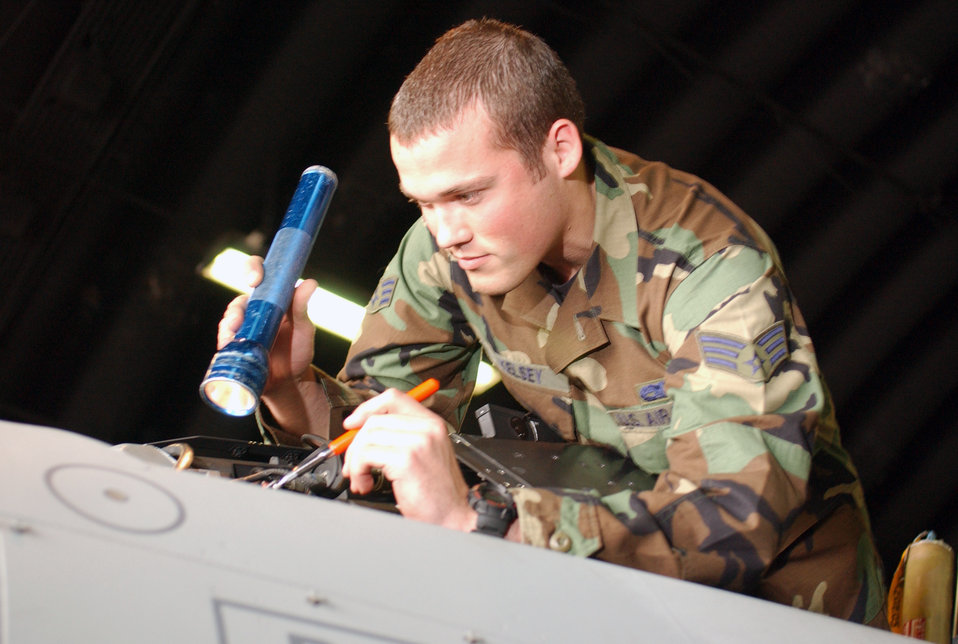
Falcon upgrades

SPANGDAHLEM AIR BASE, Germany -- Senior Airman Bryce Kelsey inspects the cockpit of an F-16 Fighting Falcon that was part of the common configuration implementation program here April 21. The six-month, $232,000,000 upgrade was used to enhance the avionics and electronics of the aircraft here. Airman Kelsey is a crew chief with the 52nd Aircraft Maintenance Squadron.